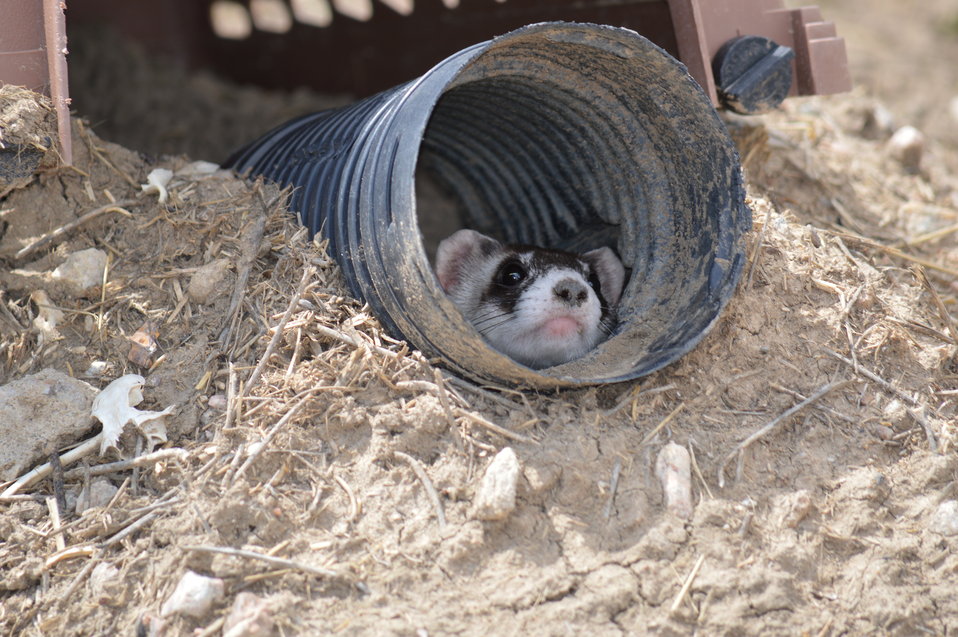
Interns visit the NBFFCC

In the summer of 2012, USFWS Region 6 interns visited the National Black-footed Ferret Conservation Center (NBFFCC) in Colorado to learn how the program reintroduces the endangered Black-footed ferret back into its native habitat.